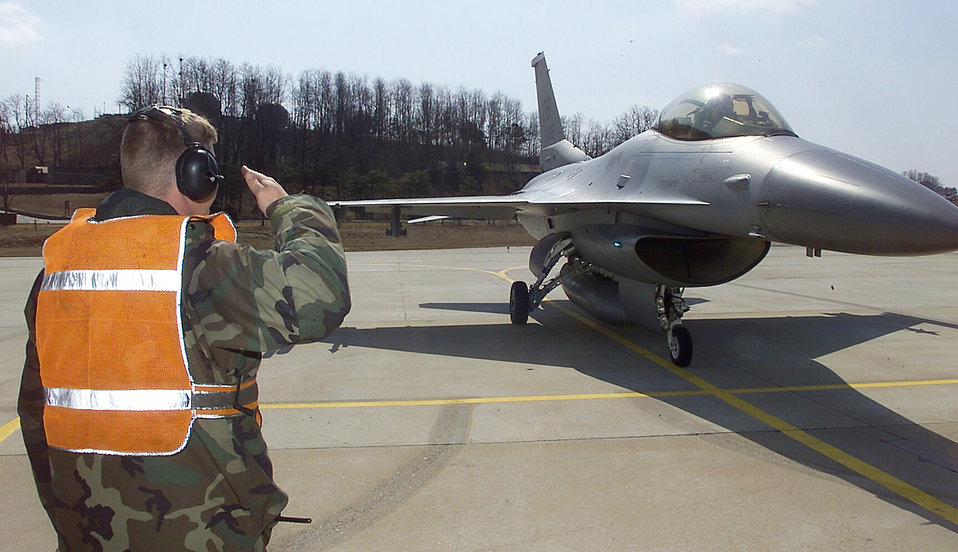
Inspected salute

OSAN AIR BASE, South Korea -- Tech. Sgt. Michael D. Johnson salutes the pilot of an F-16 Fighting Falcon after an end of runway inspection here March 3. Tech. Sgt. Johnson is an end of runway supervisor with the 51st Aircraft Maintenace Squadron.